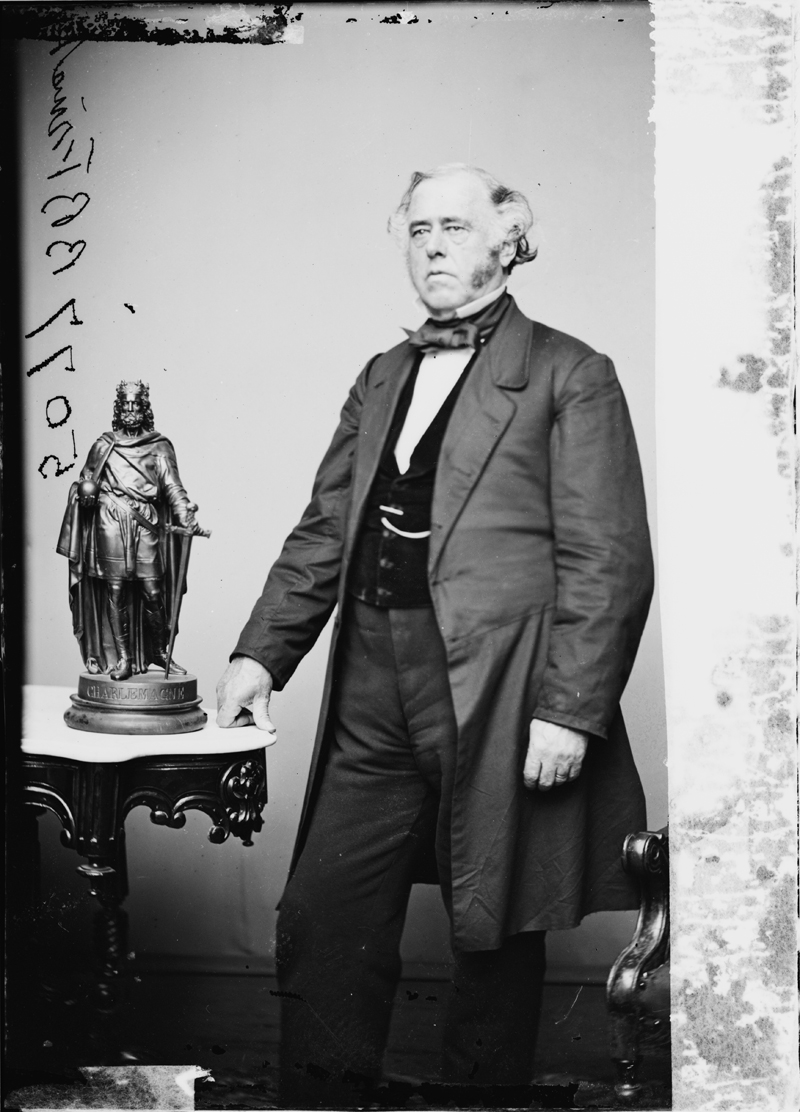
Benjamin Brown French

Benjamin Brown (B.B.) French (1800–1870) lived in Washington, D.C. for nearly 40 years, holding a number of publically appointed positions in the government. During his time as Commissioner of Public Buildings he played a role in building the Capitol Dome, extensions to the U.S. Capitol, and oversaw a number of historical events including the Gettysburg Address and the funeral of Abraham Lincoln.